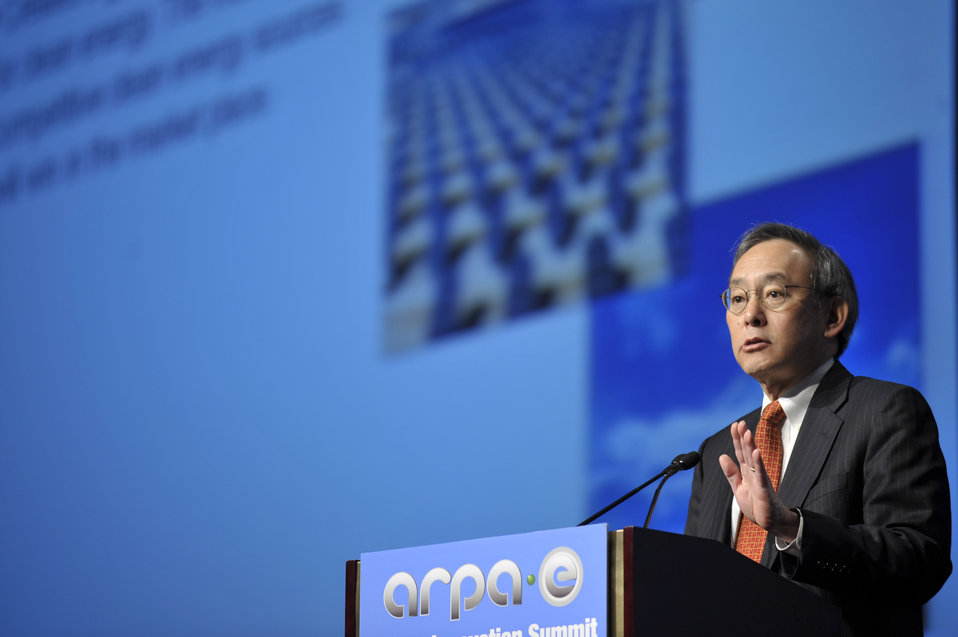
ARPA-E Energy Innovation Summit 2011, 75 of 83

Steven Chu, Secretary, United States Department of Energy.